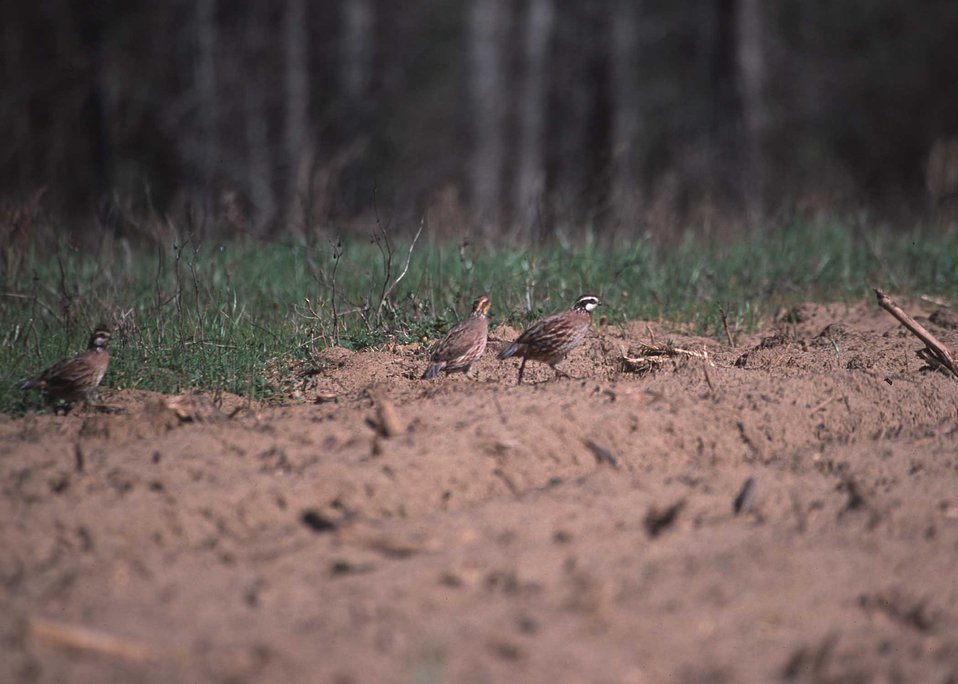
Bobwhite quail on Project Wings site in Georgia. Project implemented by NRCS, RC&D, and Georgia Power Company.